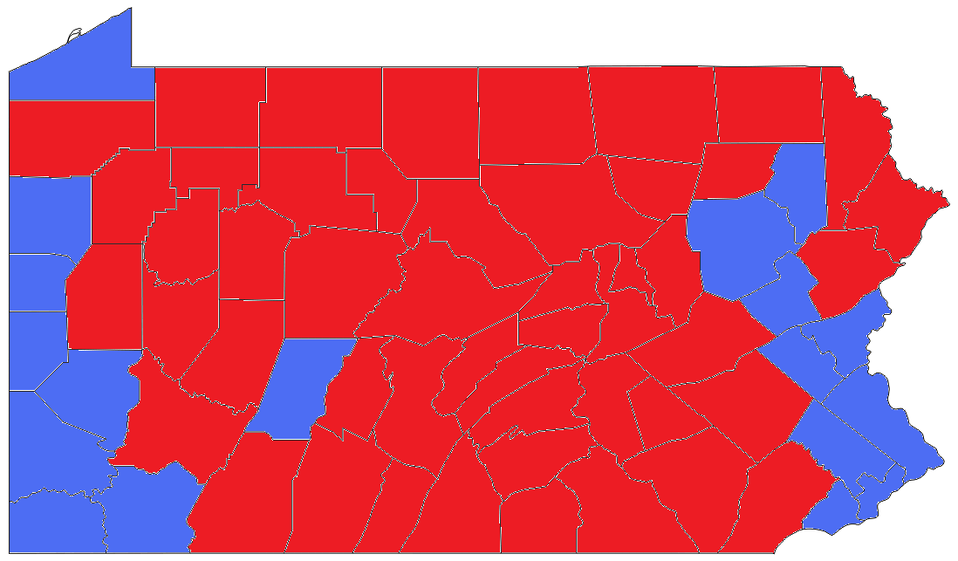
2000 presidential election counties map in PA. Blue for Gore counties, Red for Bush counties.